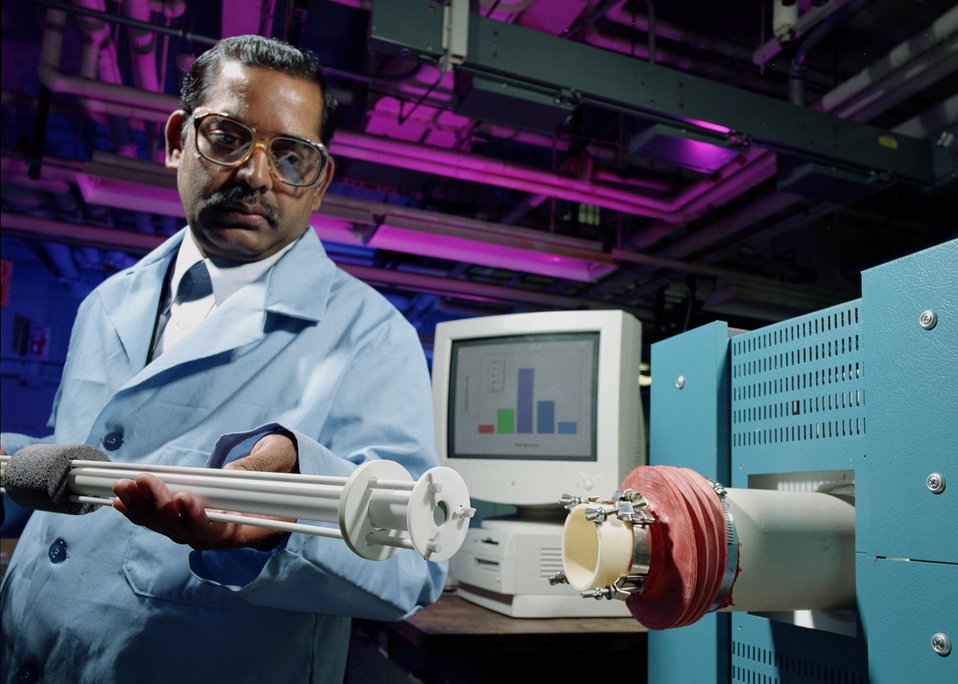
ARGONNE SCIENTIST PREPARES A TEST OF THE CERAMIC HYDROGEN TRANSPORT MEMBRANE.

A TECHNOLOGY DEVELOPED AT ARGONNE NATIONAL LABORATORY, THE CERAMIC HYDROGEN TRANSPORT MEMBRANE, RECEIVED AN 2004 R&D 100 AWARD. THE MEMBRANE, CAPABLE OF OPERATING AT HIGH TEMPERATURES AND PRESSURES, PROVIDES PURE HYDROGEN GAS BY SELECTIVELY SEPARATING HYDROGEN FROM GAS MIXTURES GENERATED BY FOSSIL FUEL-BASED PROCESSES, SUCH AS COAL GASIFICATION AND METHANE REFORMING. THIS HAS THE POTENTIAL TO BE A KEY TECHNOLOGY FOR THE DIRECT PRODUCTION OF HYDROGEN FROM COAL.